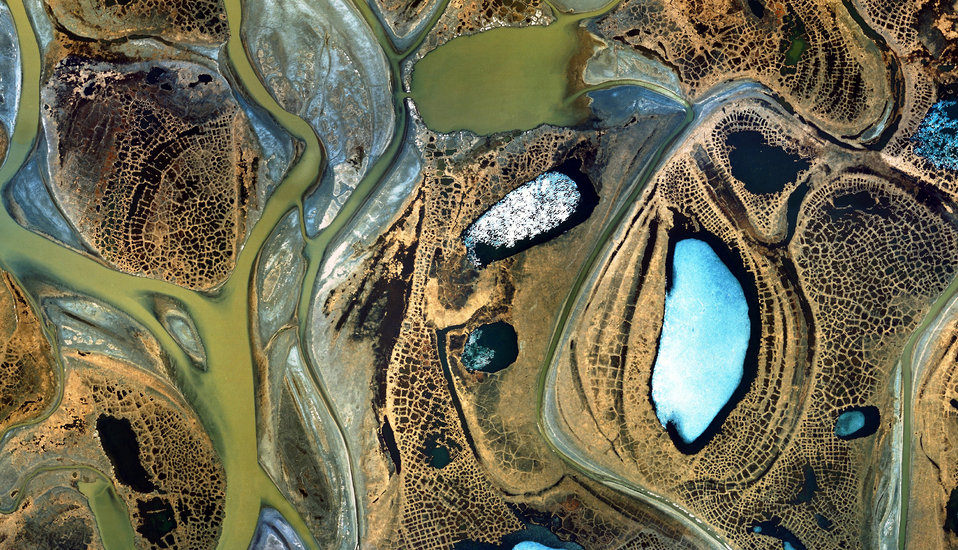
Open water and floating ice ponds,lakes and river channels in the Sagavanirktok River Delta in Alaska's North Slope.

PNNL scientists employed satellite technology to characterize the impacts of oil development activities on the environment. Using satellite radar to 'see' through the ice, scientists detected critical fish overwintering habitats by identifying where ice was grounded and where it was floating. Utilizing this information on critical habitats, fishery managers can suggest locations for energy development activities that increase the sustainability of fishery resources and minimize the environmental impact. Research was funded by the U.S. Department of the Interior.